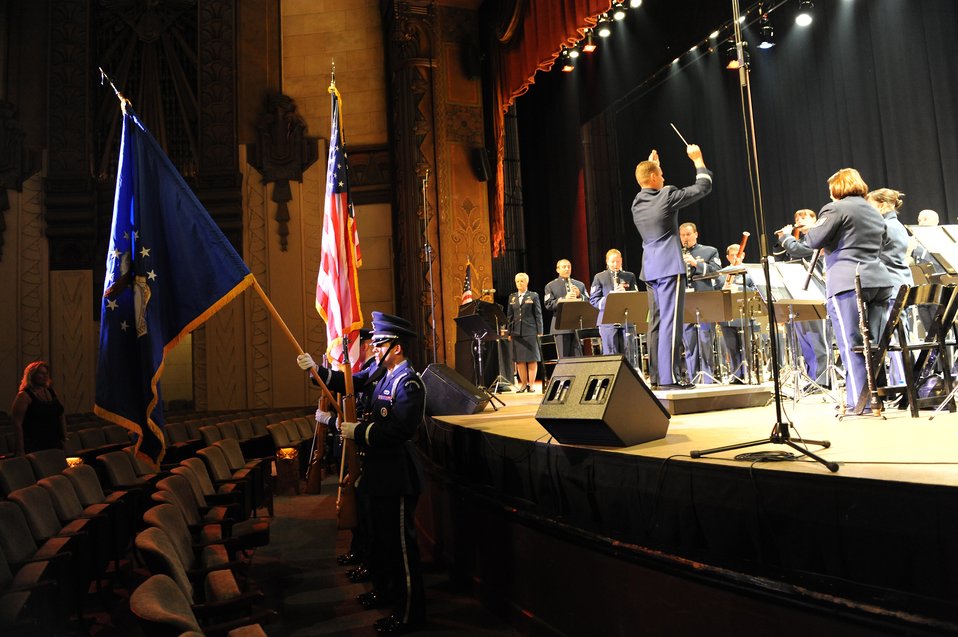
Air Force Week Los Angeles

Members of the Los Angeles Air Force Base Honor Guard post colors before the Band of the Golden West perform at the Warner Grand Theatre, San Pedro, Calif., Nov. 16. The band is performing during Air Force Week Los Angeles, an event designed to educate the local population about the Air Force's capabilities and missions through various activities and exhibitions in the Los Angeles area. It provides an up close and personal look at the men and women of the Air Force serving worldwide in the defense of freedom. Air Force Week Los Angeles runs Nov. 14-21.